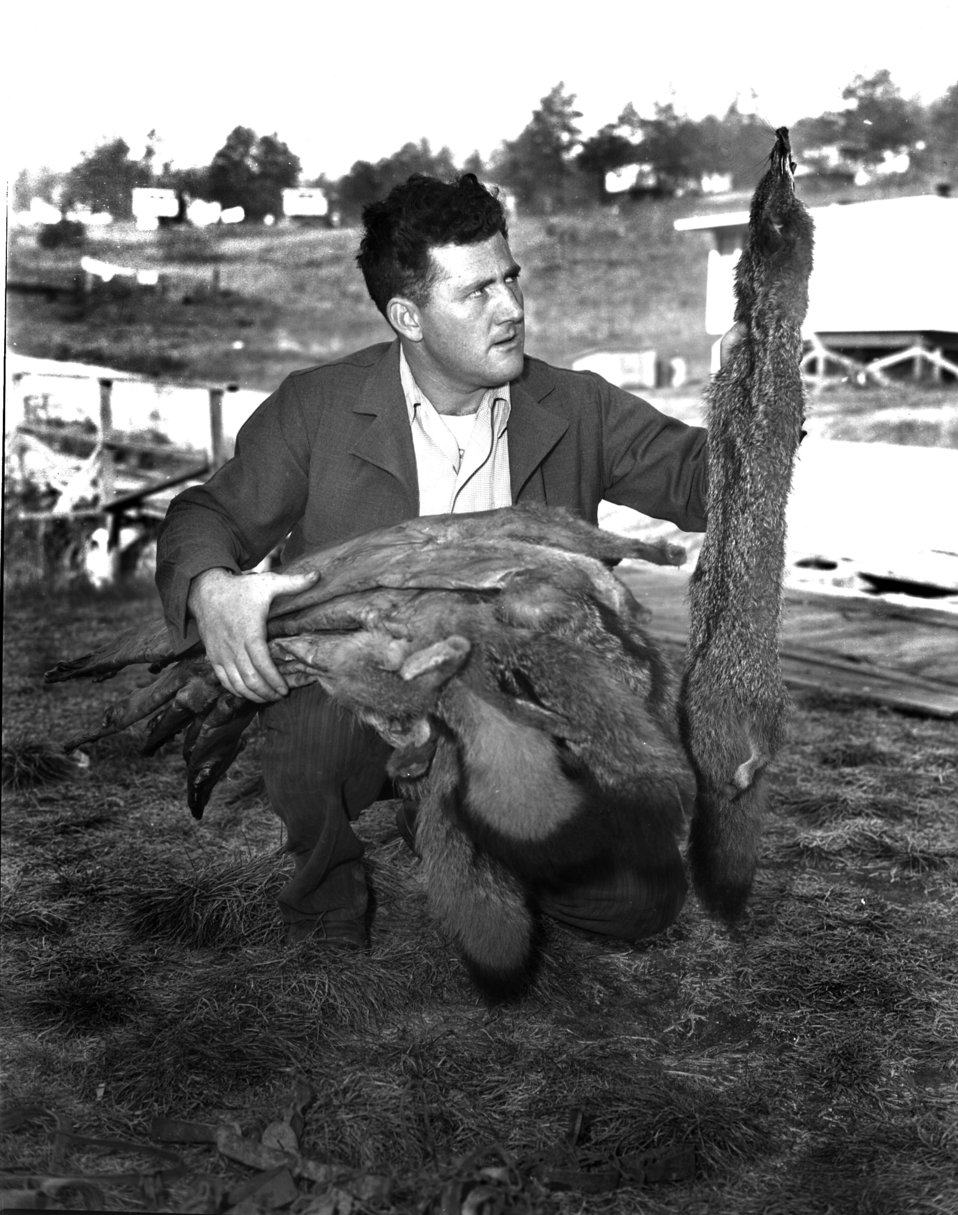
Man With Fox Furs Oak Ridge

3231-3 DOe photo Ed Westcott 1-9-1947 Oak Ridge Tennessee